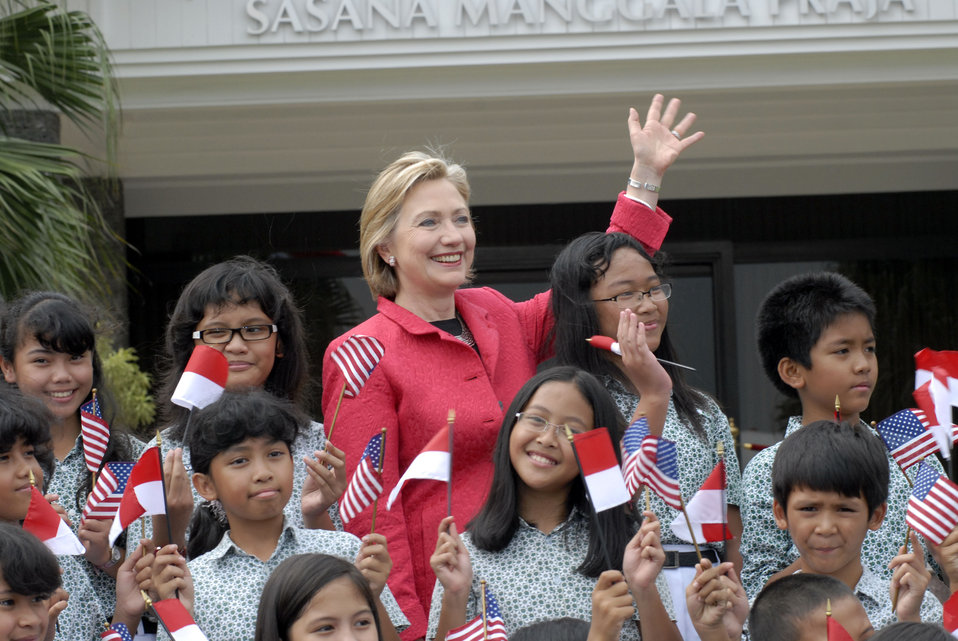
Secretary Clinton in Jarkarta With Children's Choir

Secretary Clinton with students of Menteng Elementary School 1 in Jarkarta, Indonesia February 18, 2009.